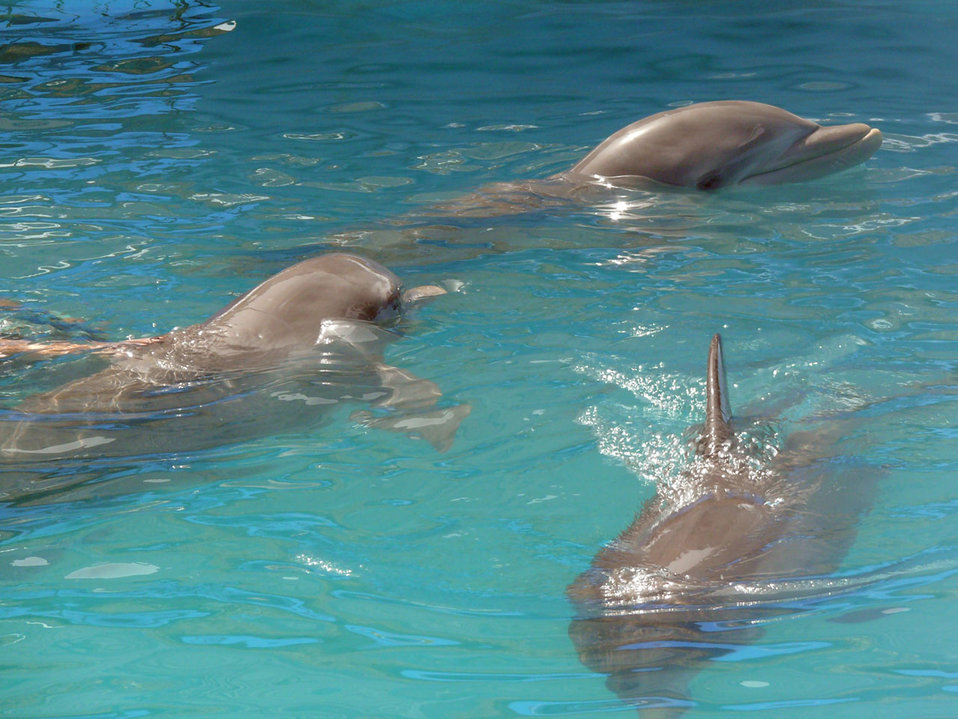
Three dolphins in the pool.